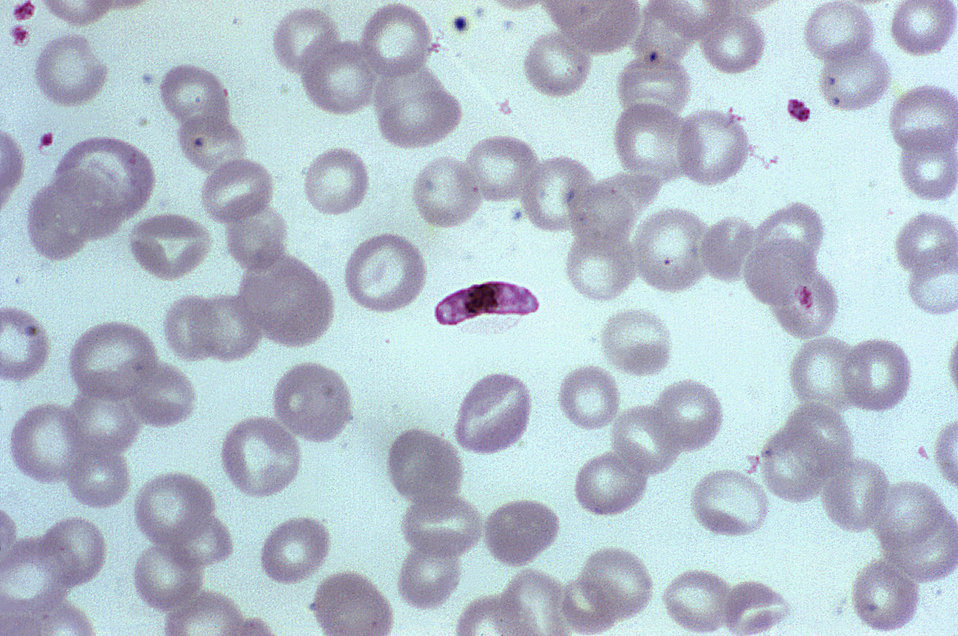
A photomicrograph of a blood smear containing a macrogametocyte of the parasite Plasmodium falciparum.